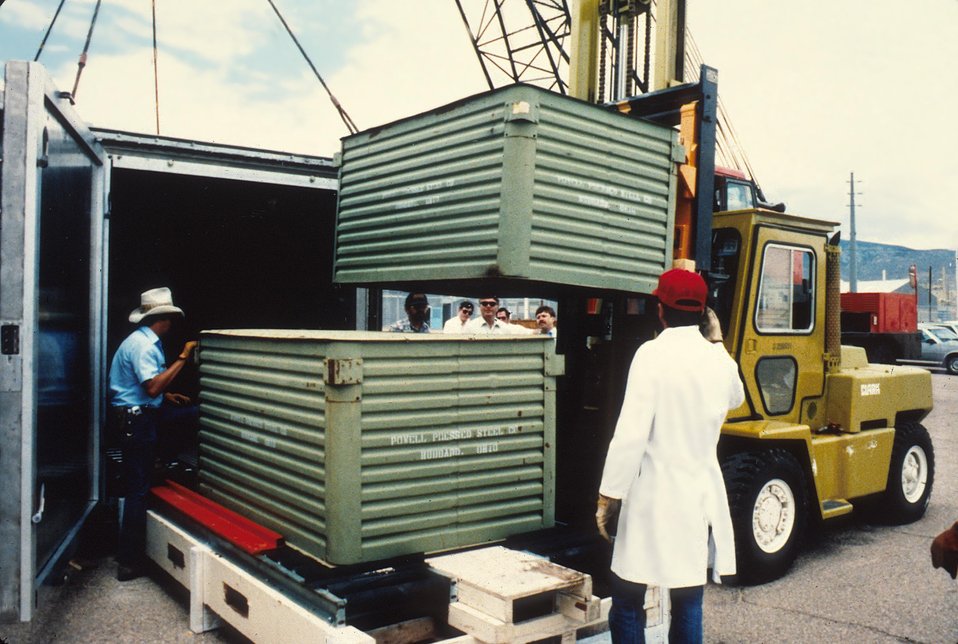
TWO STEEL BOXES ARE LOADED INTO THE TRUPACT'S STORAGE
COMPARTMENT AFTER THE JULY 10, 1984 DEMONSTRATION.
THE TRANSURANIC PACKAGE TRANSPORTER (TRUPACT) WAS DESIGNED TO SAFELY SHIP DEFENSE NUCLEAR WASTE MATERIALS TO STORAGE SITES AND REPOSITORIES. EACH CONTAINER IS 25 X 8 X 9 FEET AND WEIGHS ABOUT 33,000 POUNDS. A TRUPACT CONSISTS OF ONE STEEL BOX WITHIN ANOTHER, SEPARATED BY EIGHT INCHES OF RIGIDPLASTIC FOAM WHICH SERVES AS SHOCK ABSORBER AND THERMAL BAR-RIER. THE TRANSURANIC WASTE--PAPER FILTERS, RAGS, PROTECT- IVE CLOTHING, TOOLS, ETC. THAT HAVE BEEN CONTAMINATED BY SMALL AMOUNTS OF PLUTONIUM--WILL BE HELD IN 55-GALLON DRUMS,EACH UNIT CAN TRANSPORT SIX 'SIX-PACKS,' ABOUT 17,000 POUNDS. THE TRUPACTS, WHICH WILL BE CARRIED BY SEMI-TRAILERRIGS OR FLATBED RAILCARS, ARE DESIGNED TO WITHSTAND SEVERE ACCIDENT CONDITIONS. SAFETY TESTS FOR THE DESIGN INCLUDE A 30-FOOT DROP ONTO A FLAT SURFACE, A 40-INCH FREE FALL ONTO ASIX-INCH DIAMETER STEEL PIN, AND A 30-MINUTE EXPOSURE TO FIRE AT A TEMPERATURE OF AT LEAST 1,475 DEGREES.